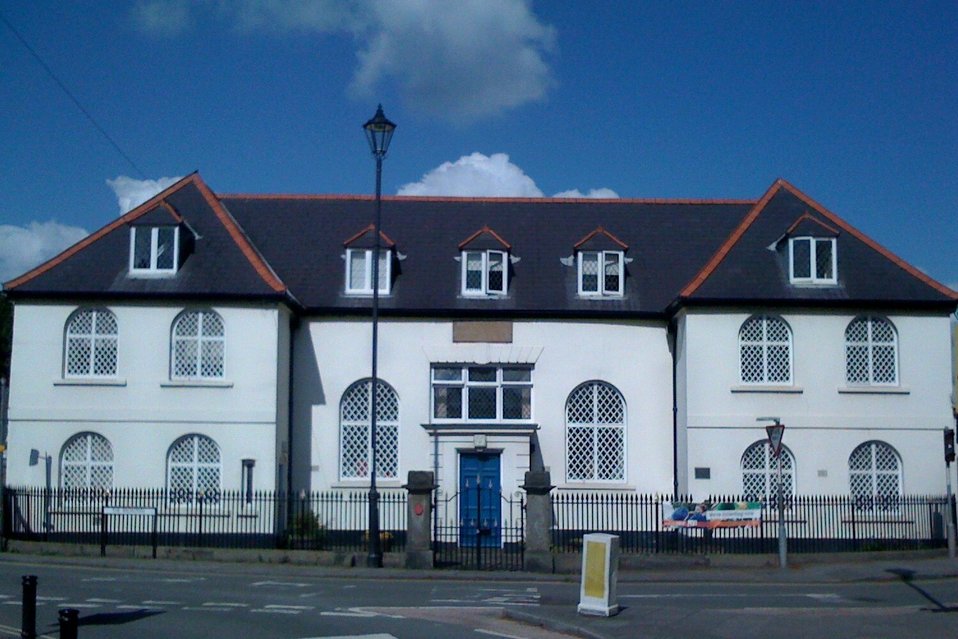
Caerleon Endowed School
Category:Pictures of Caerleon